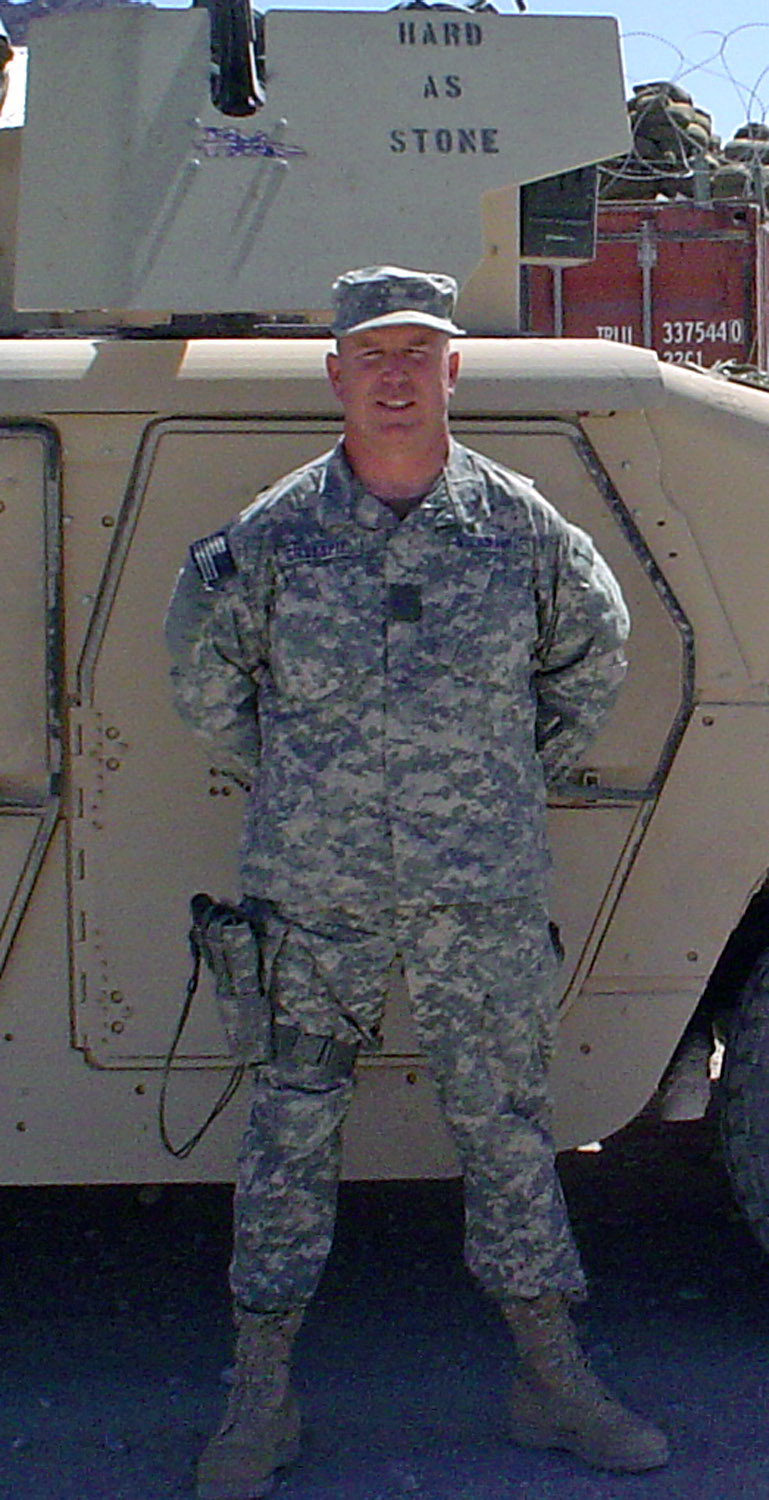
Luke releases statement on fallen Airman

Master Sgt. Randy J. Gillespie, 44, died July 9, succumbing from wounds sustained as a result of small arms fire while deployed with the 755th Air Expeditionary Group in support of Operation Enduring Freedom outside of Camp Stone, Forward Operating Base near Herat, Afghanistan.